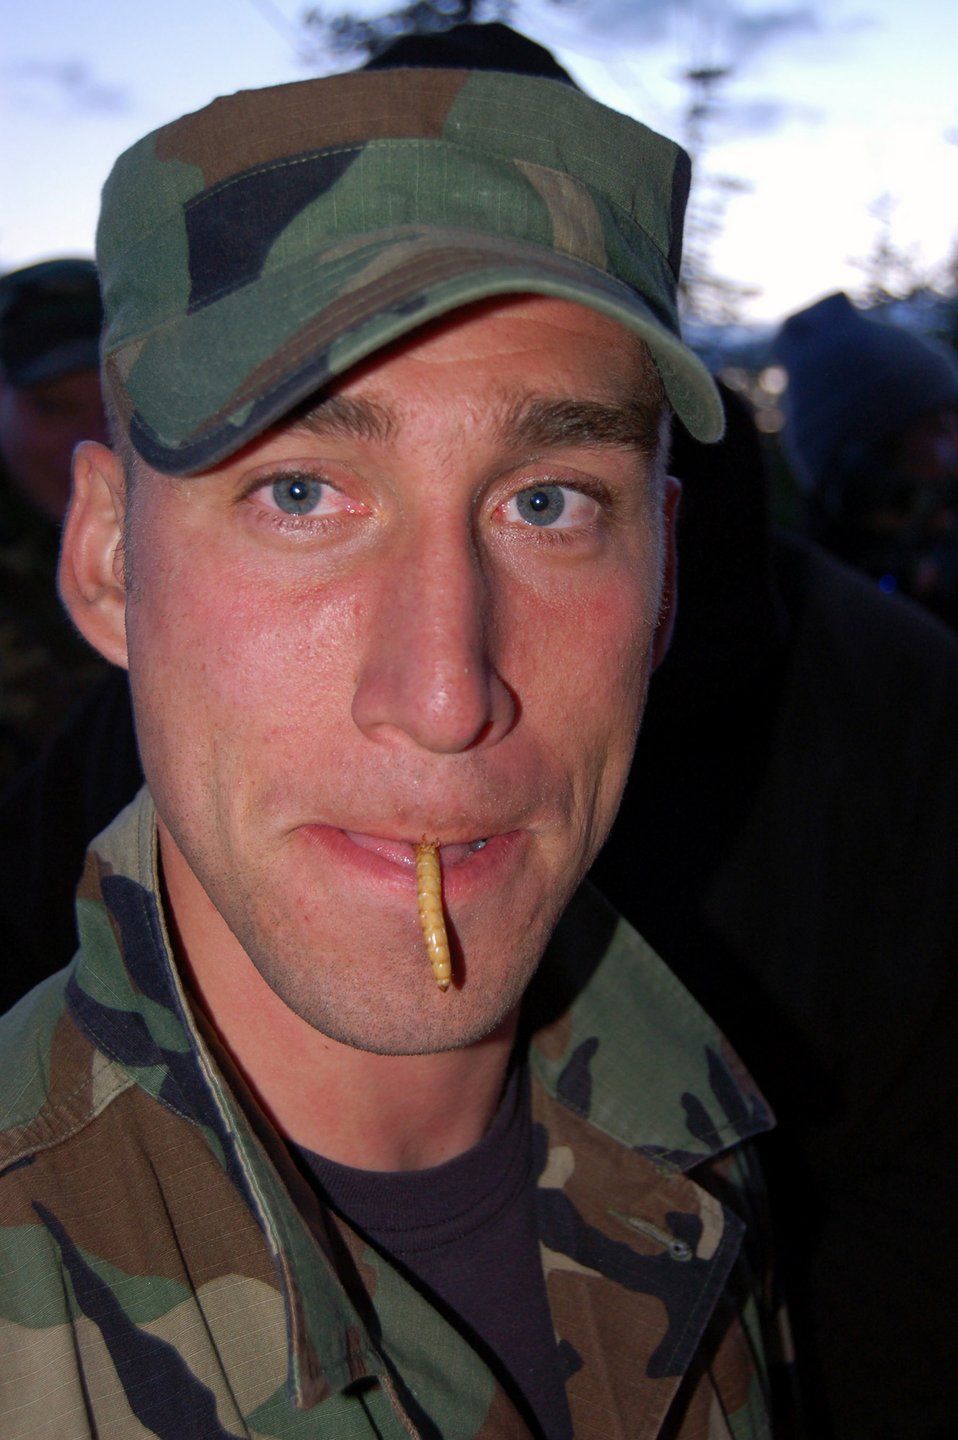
Ready for the challenge

Staff Sgt. Michael Garcia, a Survival, Evasion, Resistance, and Escape specialist and water survival instructor, slurps down a grub for supper June 11 as part of the SERE Challenge. Finding anything available to eat and overcoming food aversions is a basic skill set of SERE.